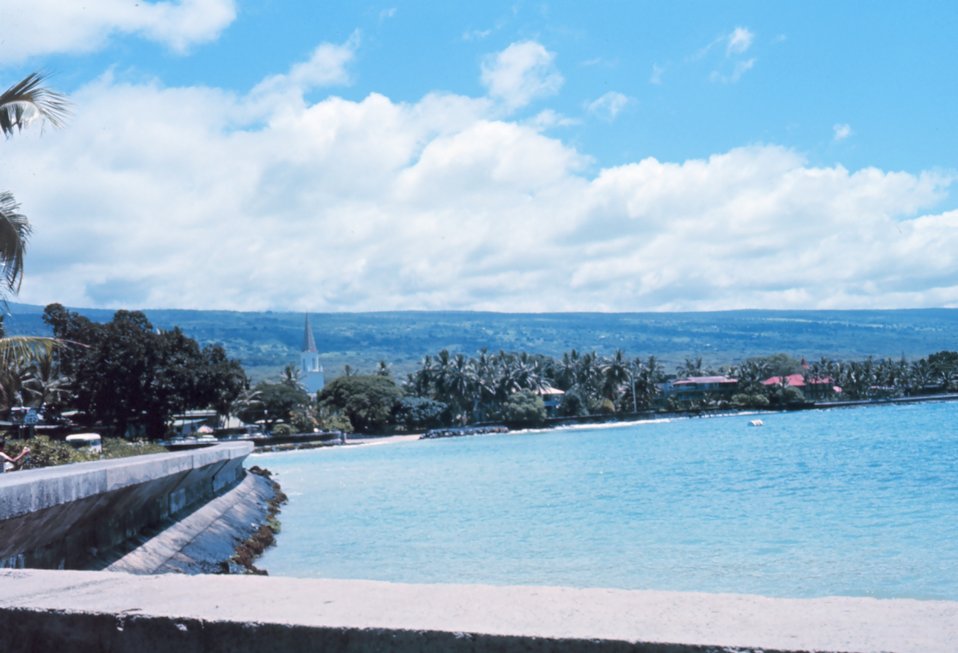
Mokuaikaua Church, the first and oldest Christian chruch in Hawaii, as seen along the Kona seawall.